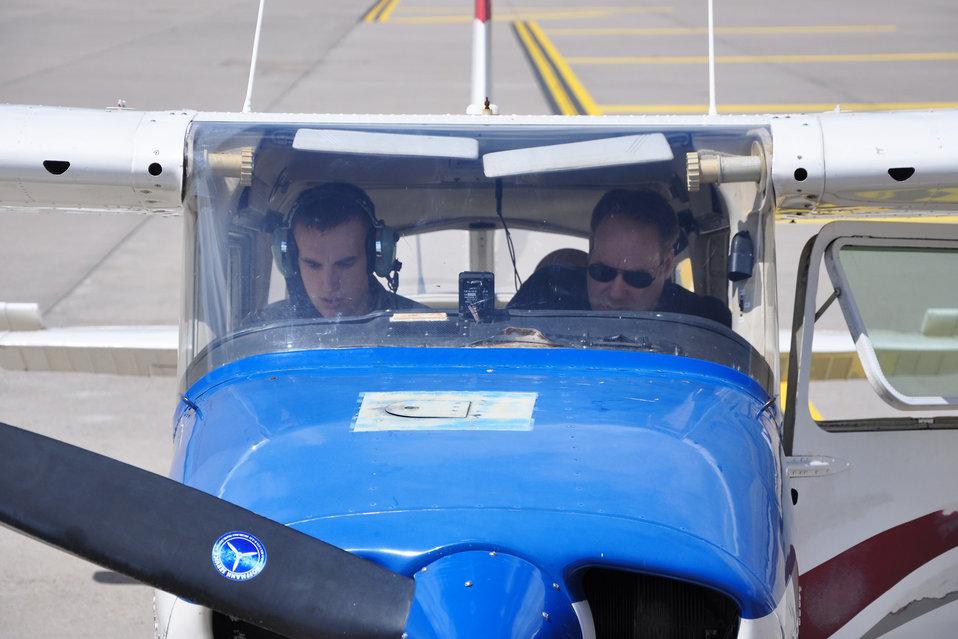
Airman takes to the skies

Airman 1st Class Nicholas Fennen and Lt. Col. Rich Radvanyi run through preflight checklists of a Cessna 172 during an incentive flight at Ramstein Air Base, Germany, June 22, 2012. Fennen was selected to participate in the Ramstein Daedalians Aviation Incentive Flight program, which provides quarterly aviation incentive flights to deserving young Airmen and gives them the chance to live a childhood fantasy of flight. Fennen is a 86th Airlift Wing Judge Advocate discharge paralegal and Radvanyi is a pilot and president of the Coleman Aero Club.